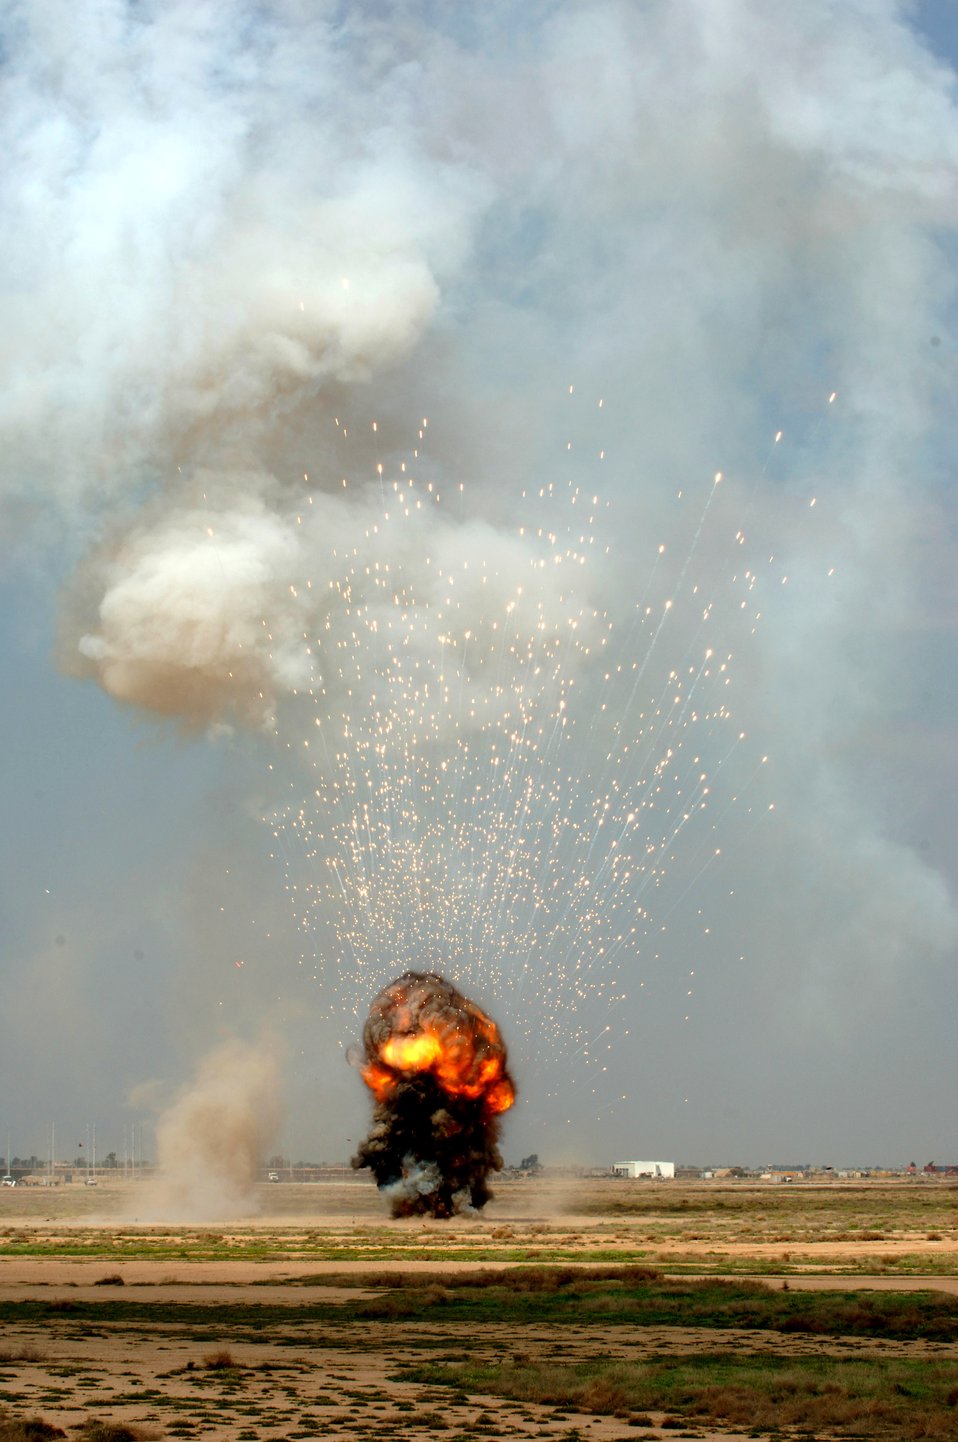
Ordnance disposal makes for no ordinary day

A controlled detonation is conducted by Airmen with the 332nd Expeditionary Civil Engineer Squadron's Explosive Ordnance Disposal Flight March 20 at Balad Air Base, Iraq. Balad EOD members periodically dispose of unserviceable, excess, or dangerous ordnance by fabricating explosive demolition charges in a controlled environment.